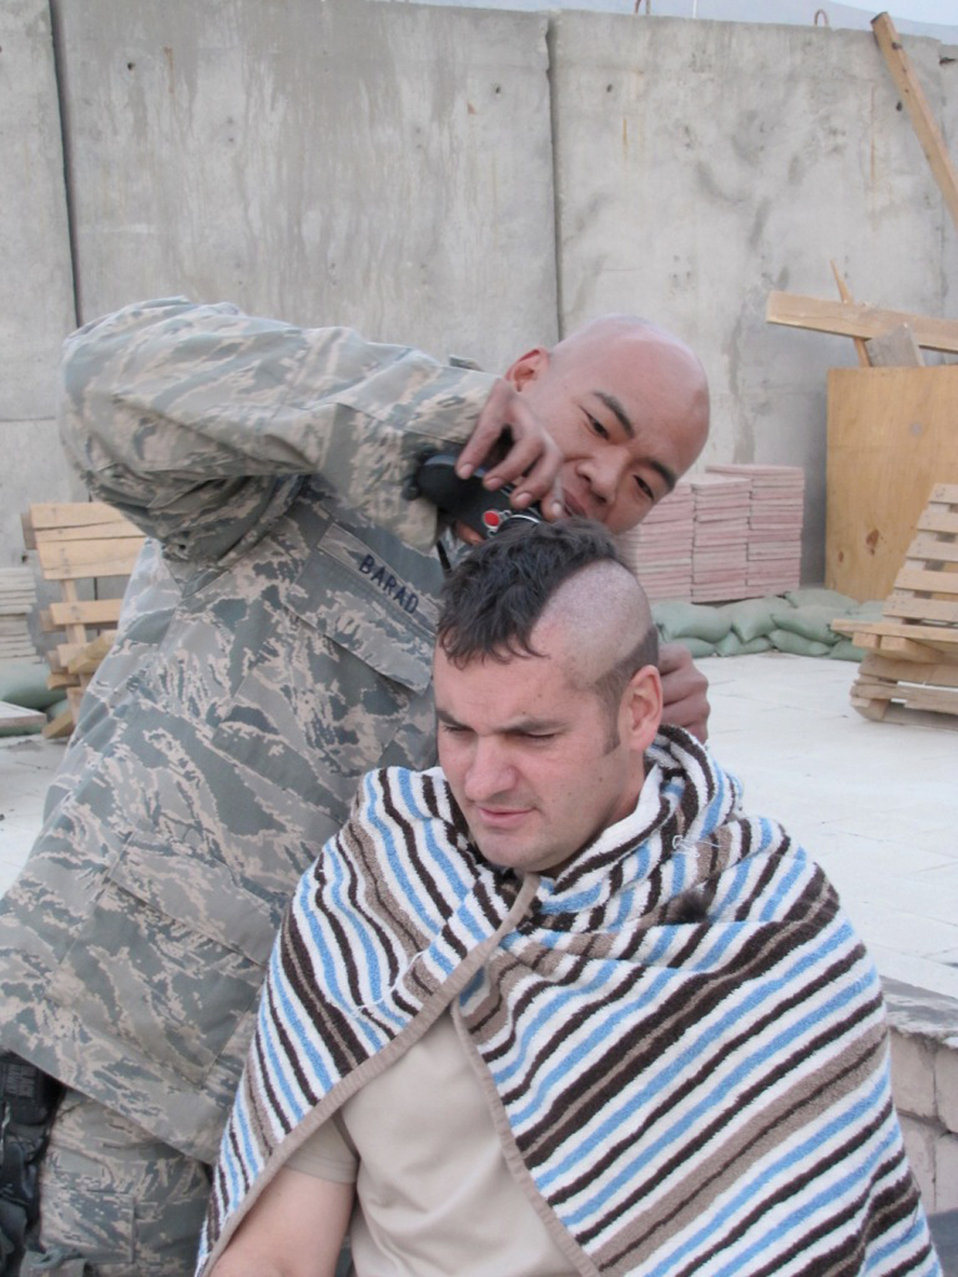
Lyla

Tech. Sgt. Arthur Barad shaves Senior Master Sgt. Bubba Beason's head so he could participate in a group photo for Lyla, a cancer patient and the St. Jude's Childrens Research Hospital Dec 6, 2010. Sergeant Barad is a C-27 NATO Air Training Command - Afghanistan adviser.